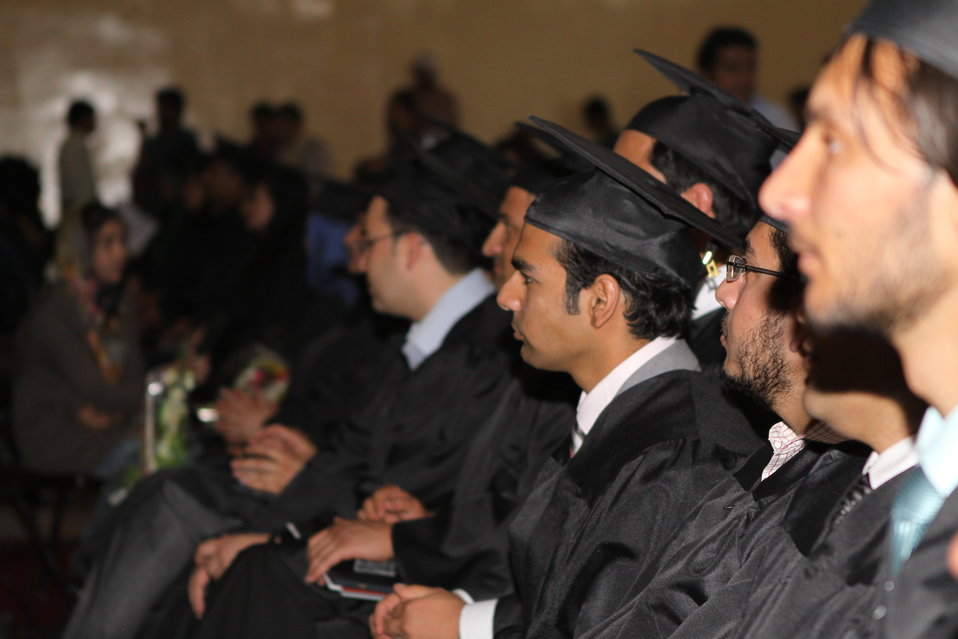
100526 AUAF Graduation 313